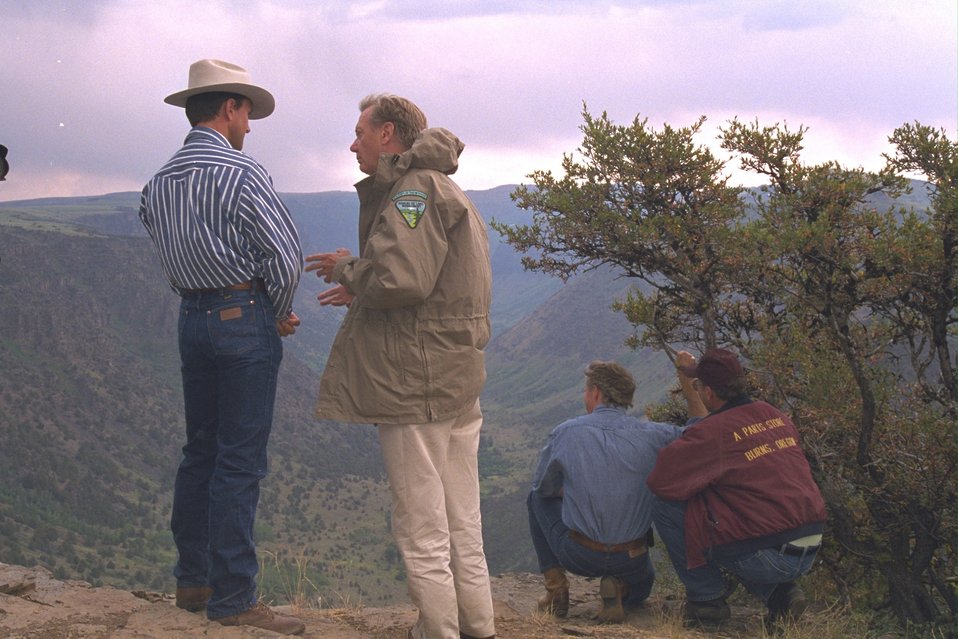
Rancher, Stacie Davies, talks with Secretary Babbitt about Steens Designation issues at Big Indian Gorge. Also Governor Kitzhaber and Harney County Judge Steve Grasty are kneeling looking out at the Gorge.